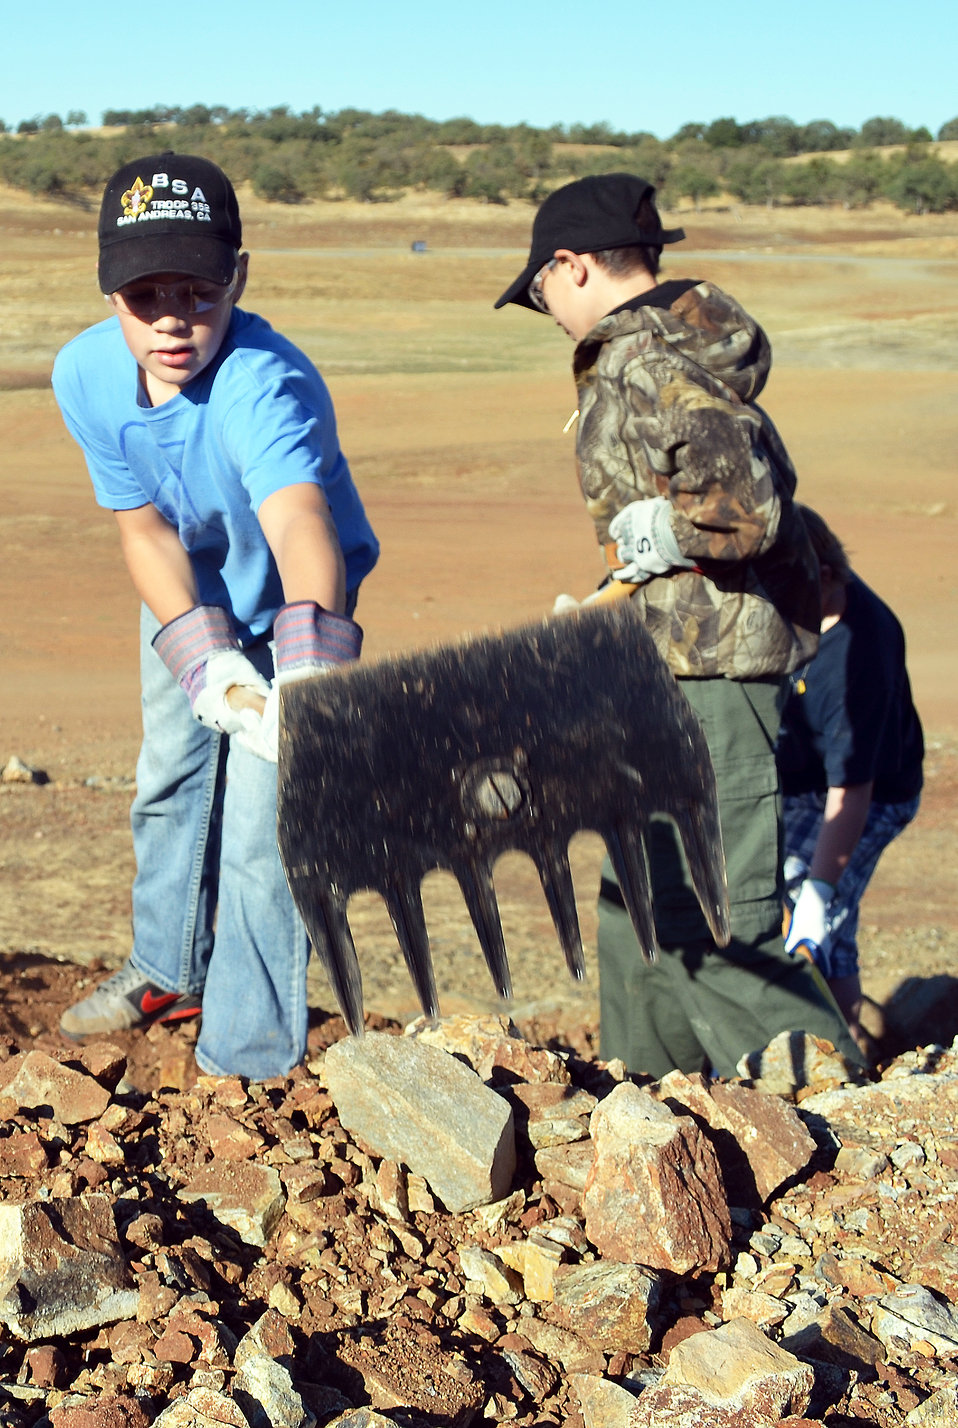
NPLD 2013 USACE Sacramento District

Boy Scouts with Troop 352 of Valley Springs, Calif., help build a trail during National Public Lands Day, Sept. 28, 2013, at New Hogan Lake, the U.S. Army Corps of Engineers Sacramento District park near Valley Springs.